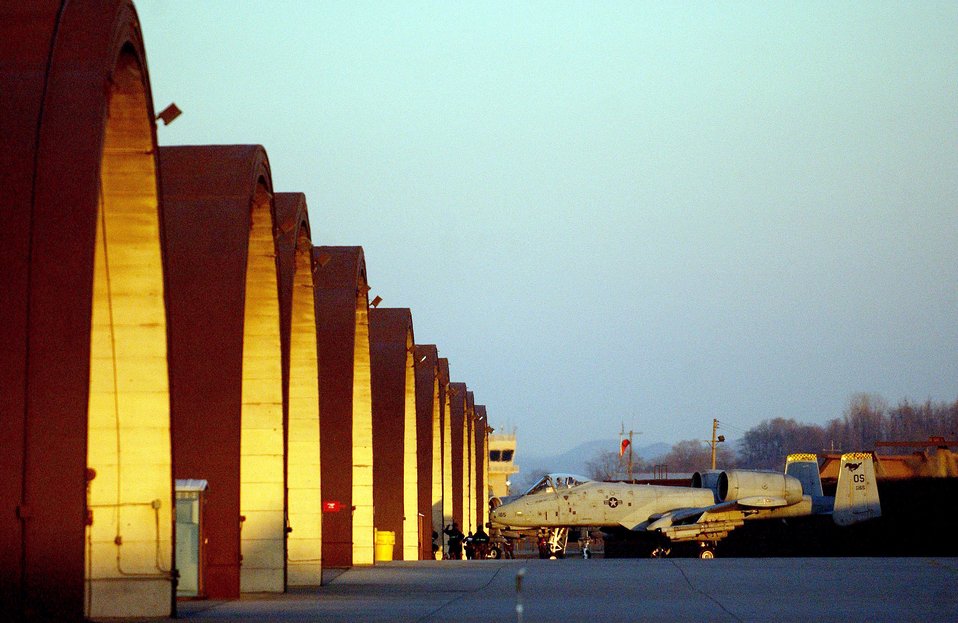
Beverly Bulldog 06-01

OSAN AIR BASE, South Korea (AFPN) -- An A-10 Thunderbolt II returns after flying a training mission supporting exercise Beverly Bulldog 06-01 here Jan. 24. Exercise scenarios test the base's ability to protect its operations from missile attacks or enemy forces.